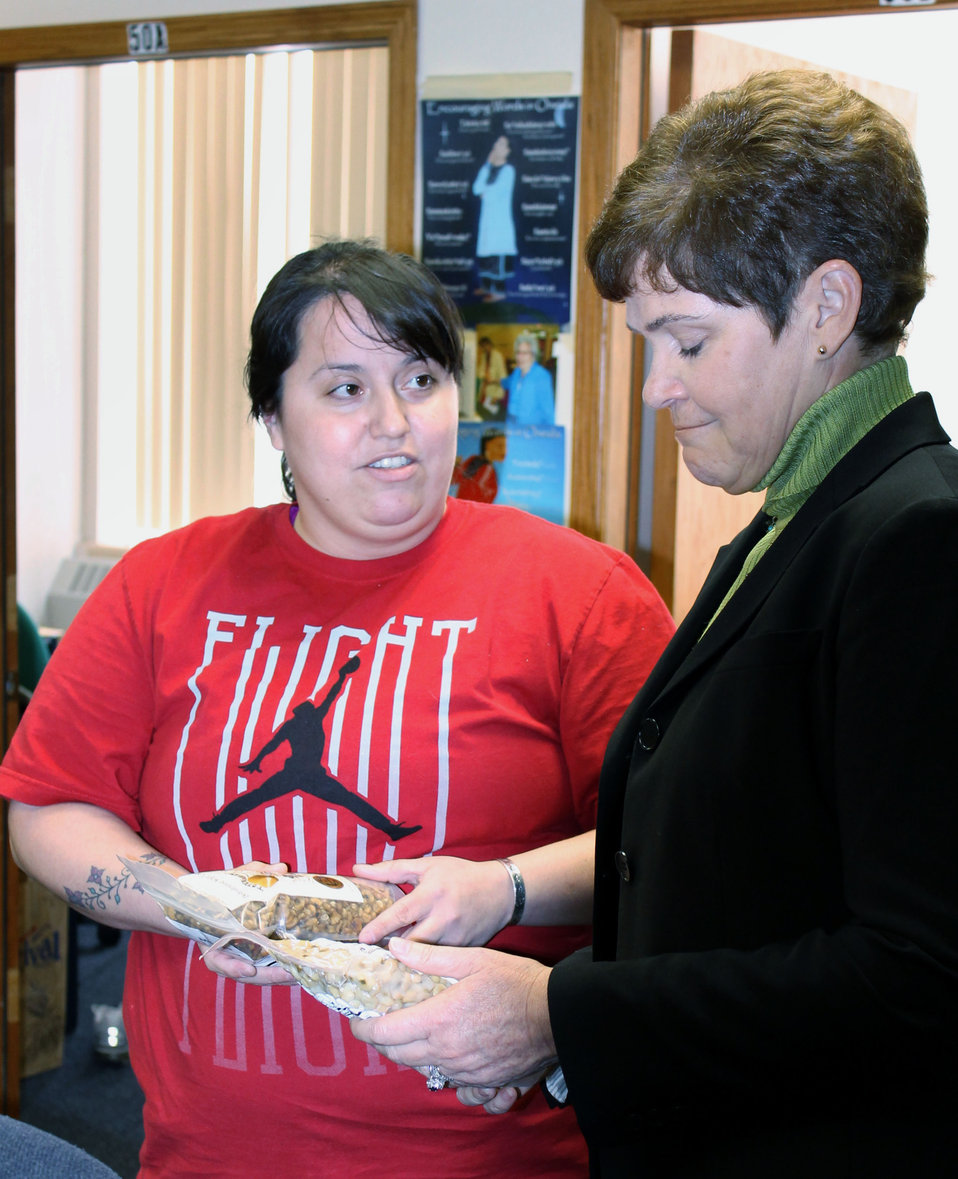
Agriculture Deputy Secretary Krysta Harden views cannery products at the Oneida Nation: Tsyunhehkwa Cannery in Wisconsin on Tuesday, Apr. 15, 2014.